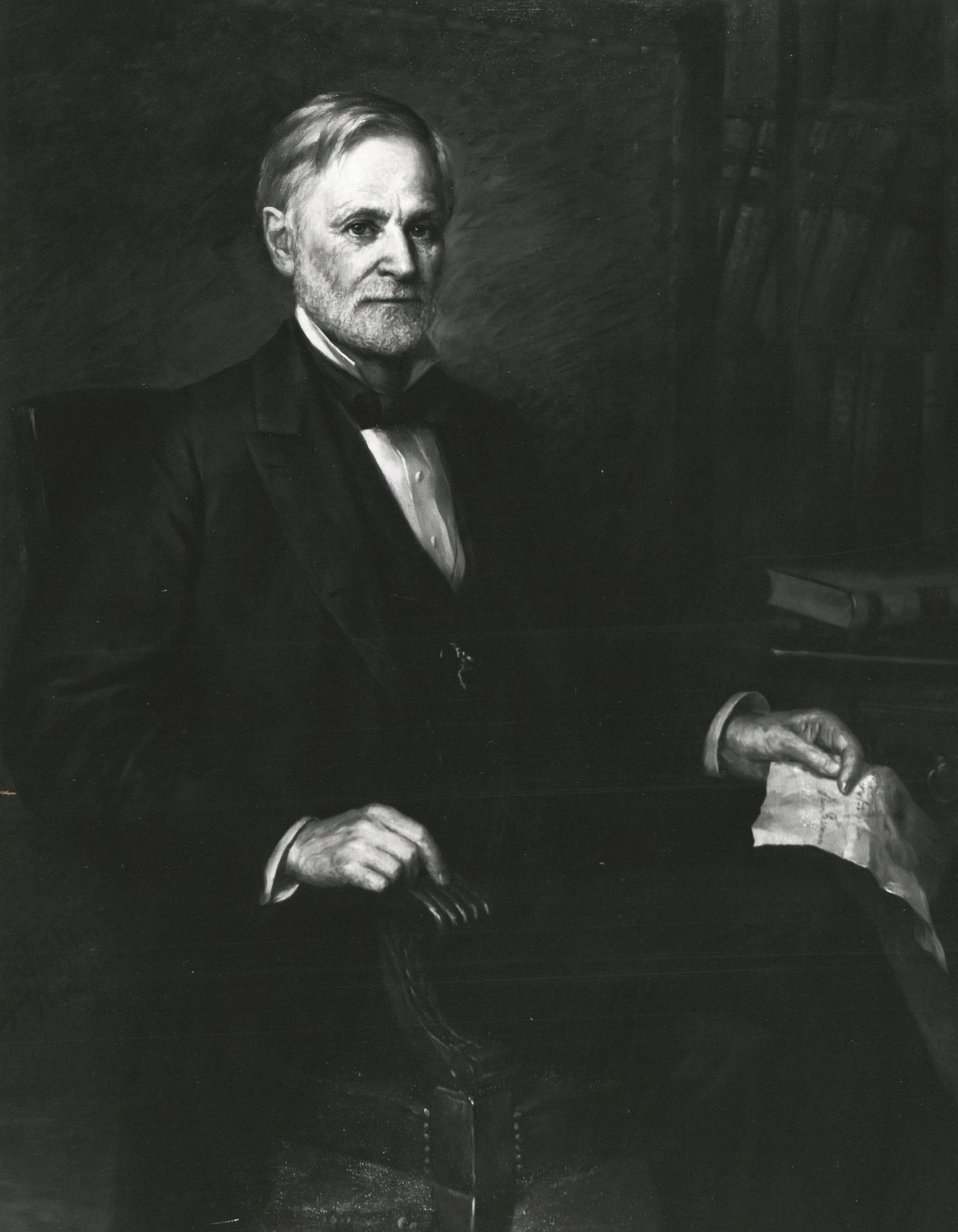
John Sherman, U.S. Secretary of State, March 6, 1897 to April 27, 1898